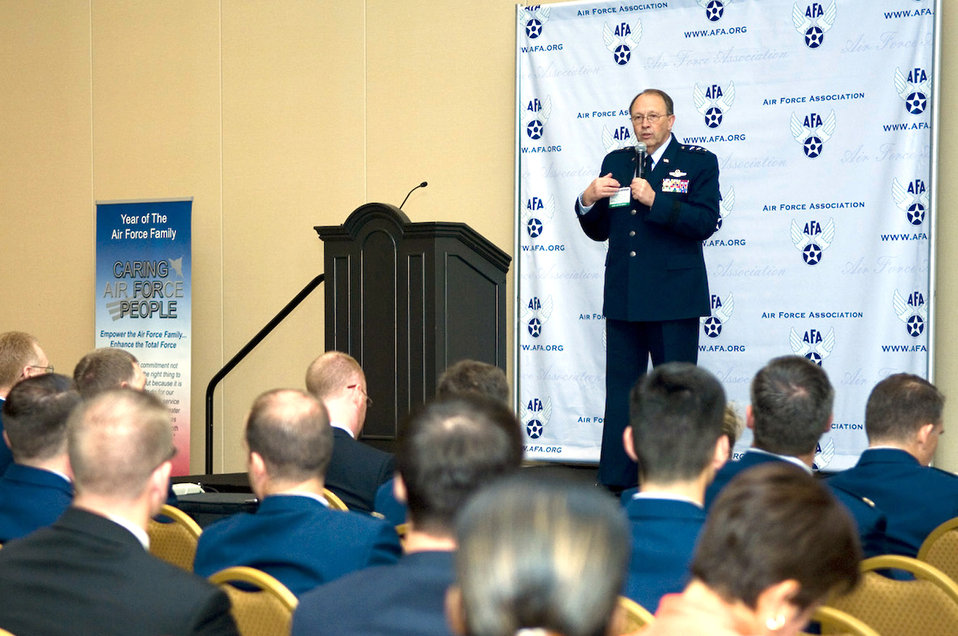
General Stenner speaks at AFA conference

Lt. Gen. Charles E. Stenner Jr. speaks about the Air Force Reserve challenges Sept. 15 at the 2009 Air Force Association Air & Space Conference held at the National Harbor in Oxon Hill, Md. General Stenner is chief of the Air Force Reserve and commander of Air Force Reserve Command.